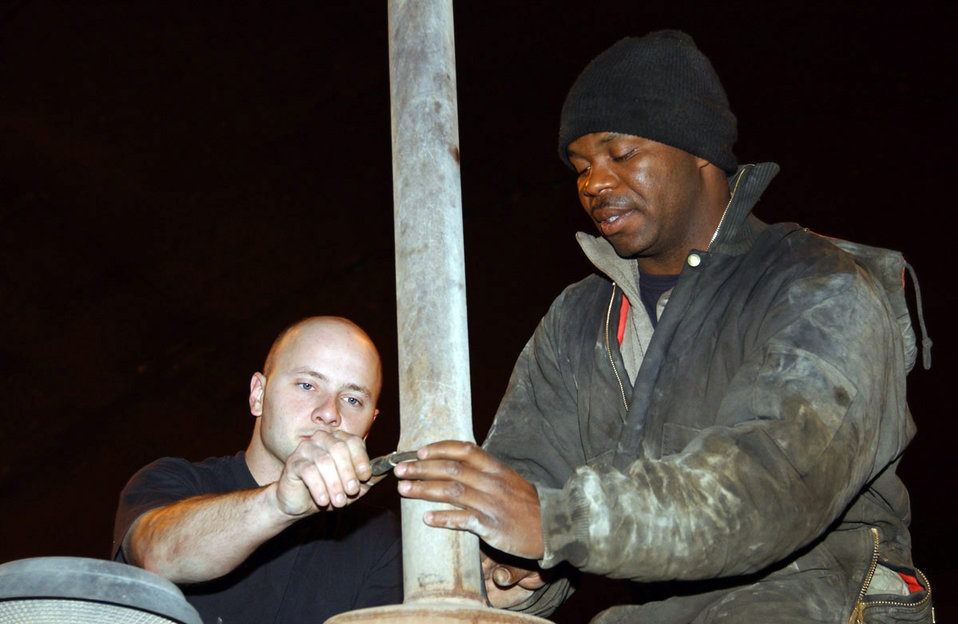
Muffler clamp

BALAD AIR BASE, Iraq (AFPN) -- (Left to right) Staff Sgt. Don Gerhart and Staff Sgt. Darnell Roberts tighten a muffler clamp on a case backhoe. Both Airmen are deployed here to the 332nd Expeditionary Logistics Readiness Squadron.